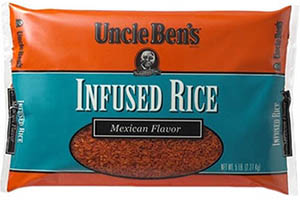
RECALLED – UNCLE BEN’S INFUSED Rice products

February 9, 2014 – Product Recall – Mars Foodservices US Recalls Infused Rice Products Sold For Wholesale Distribution --UNCLE BEN’S® retail grocery products not affected--.